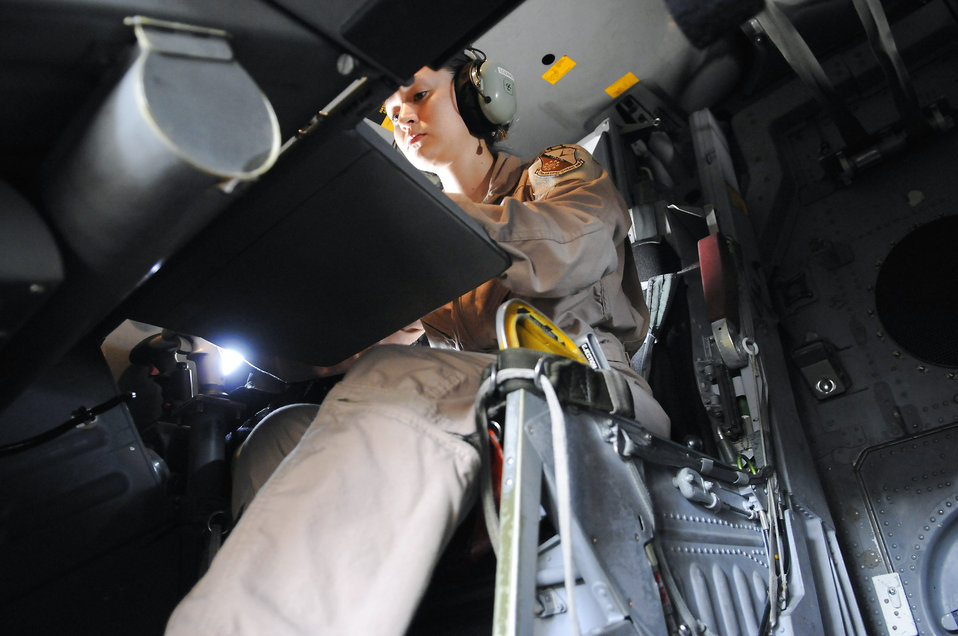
B-1B aircrews bring unique capabilities to the fight

Capt. Daniela Lozano powers up the B-1B Lancer and proceeds through the weapons system preflight checklist Dec. 9 at an air base in Southwest Asia. A preflight crew prepares the aircraft for flight in order to allow the crew actually flying to maximize their available flight time. Captain Lozano is a native of Dallas and is deployed from Ellsworth Air Force Base, S.D. She is a weapons systems officer assigned to the 34th Expeditionary Bomb Squadron.